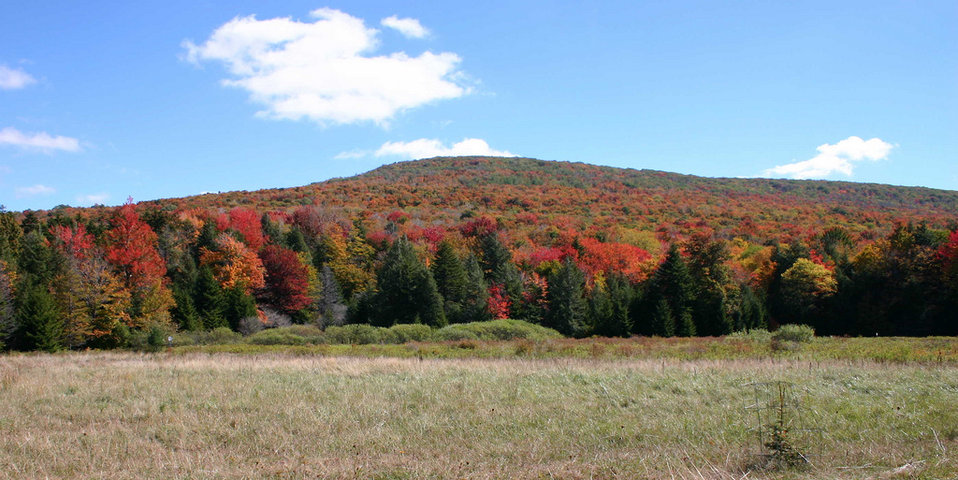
Fall Foliage